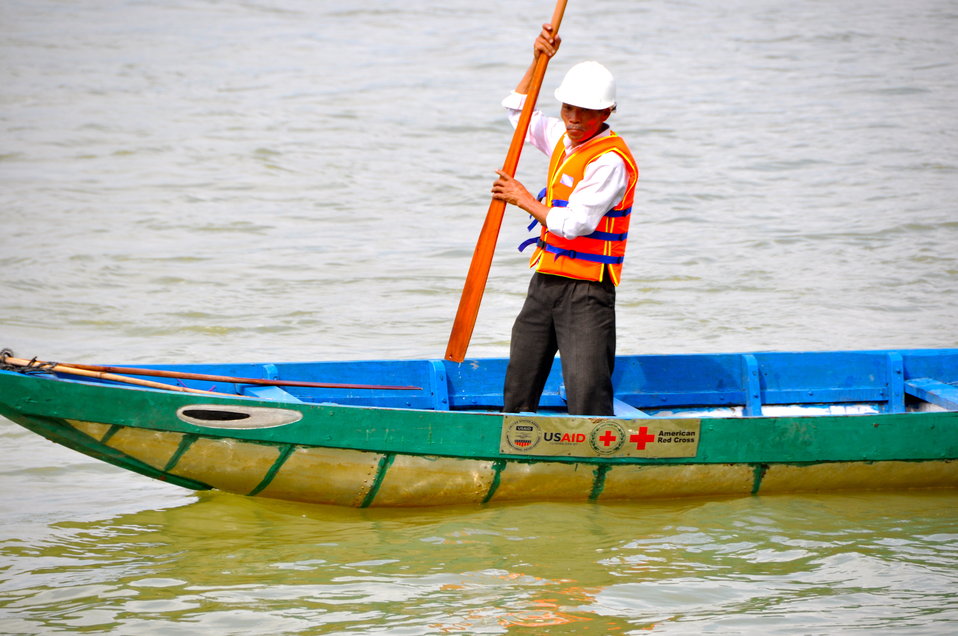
USAID, Red Cross Support Disaster Response Drill in Duy Hoa Commune, Quang Nam Province

Duy Hoa Commune, Quang Nam Province
December 5, 2012